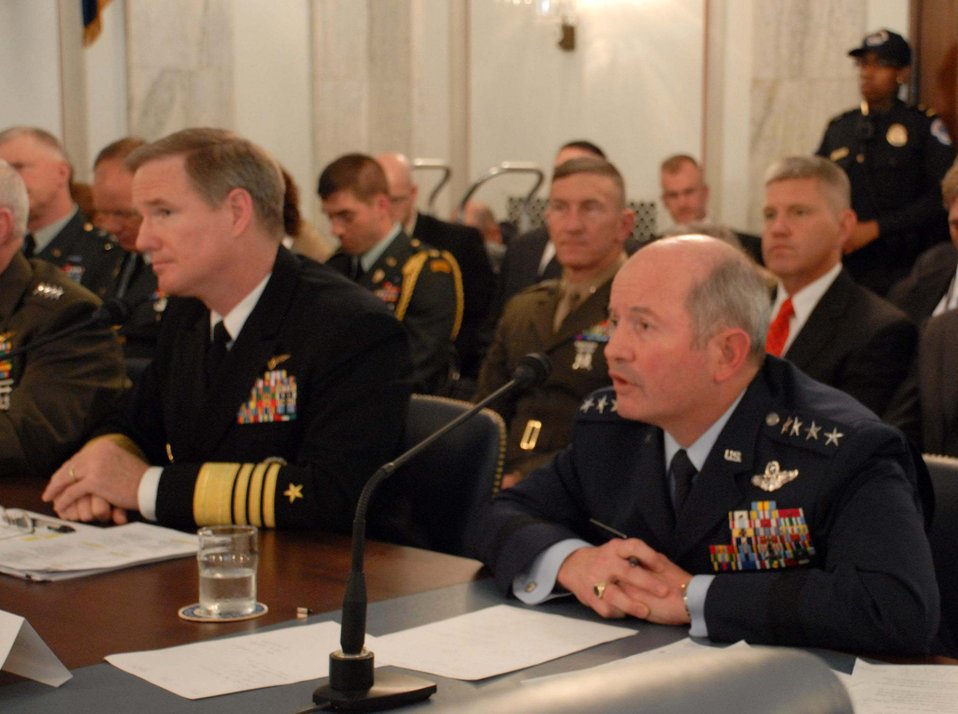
Air Force ready, but general has concerns for future

Air Force Vice Chief of Staff Gen. Duncan J. McNabb testifies before the Senate Armed Services Committee Subcommittee on Readiness and Management Support April 1. General McNabb expressed concerns for readiness in the future if the Air Force does not recapitalize and modernize its aging aircraft fleet.